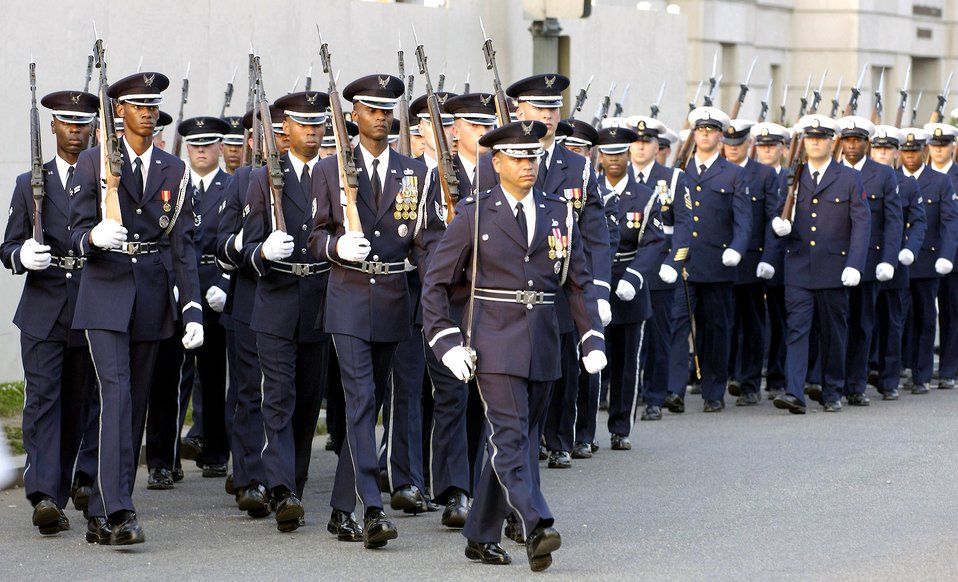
Ford funeral support

Airmen from the Air Force Band and Air Force Honor Guard will be involved over the next five days with the memorial services planned for former U.S. President Gerald R. Ford who passed away Dec. 26.